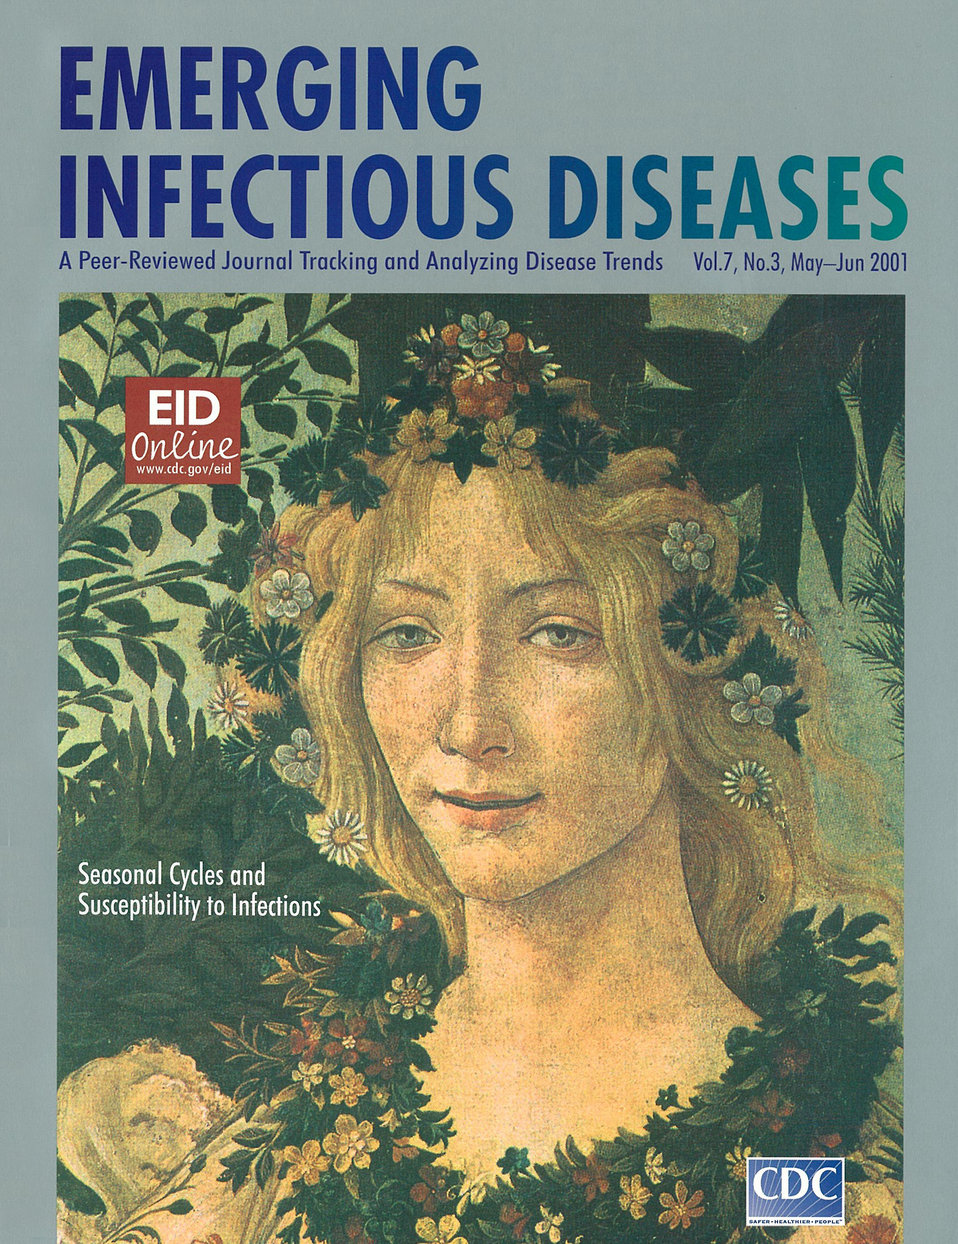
Emerging Infectious Diseases (EID) cover artwork for Volume 7, Number 3, May-June 2001 issue.